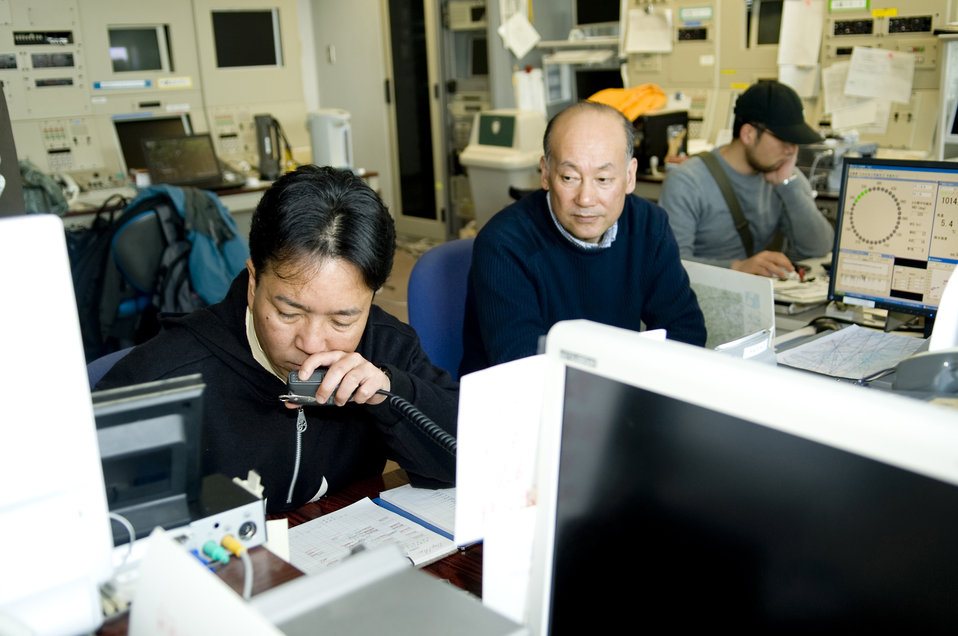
Airmen work with Japanese air controllers

Japanese air traffic controllers coordinate with Airmen to land aircraft March 26, 2011, at Sendai Airport, Japan.